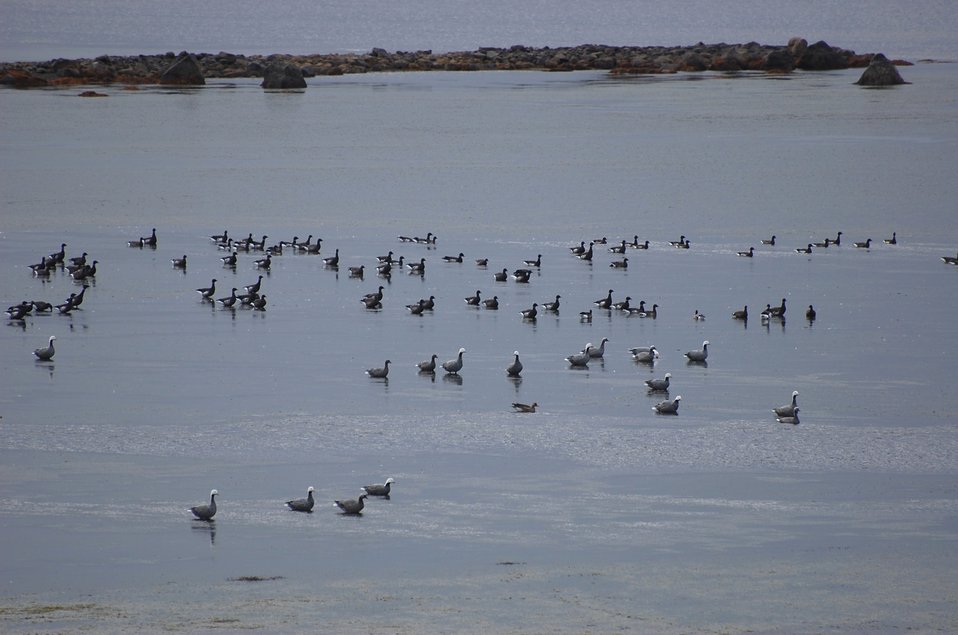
Emperor Geese and Brant

Izembek National Wildlife Refuge